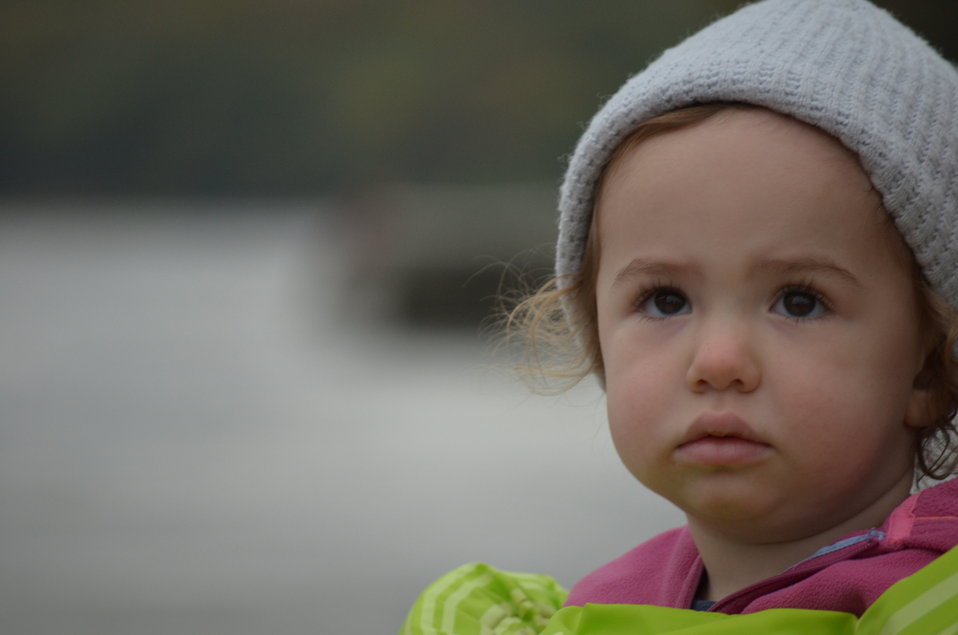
Young naturalist

Young Master Naturalist Maggie. USFWS/Ashley Spratt